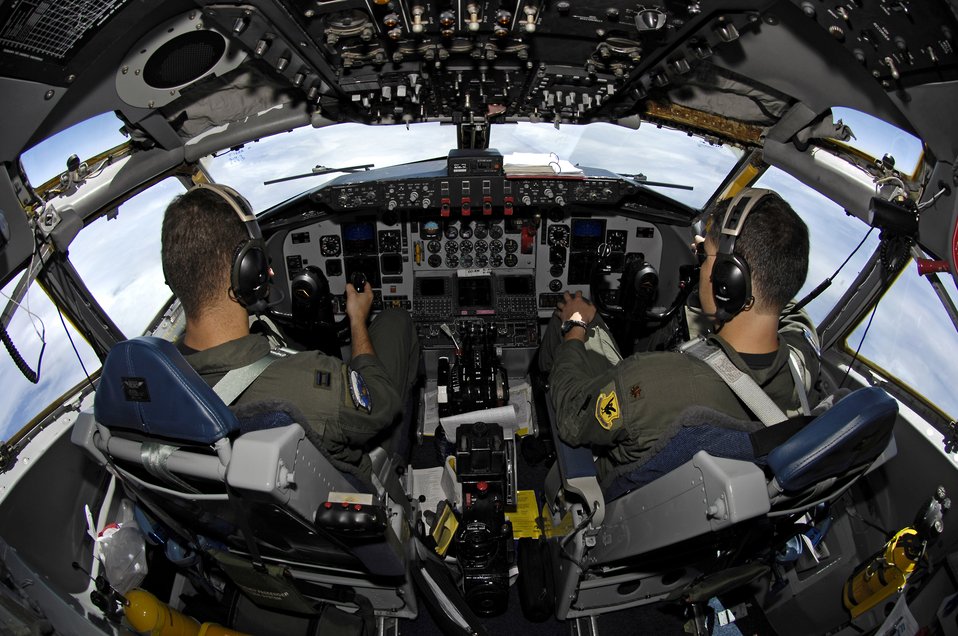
KC-135, C-17 crews rendezvous for refuel readiness

Capt. Jeff Quick and Maj. Brian Burr pilot their KC-135 Stratotanker June 18 during aerial refueling practice. The KC-135 crew from the 909th Air Refueling Squadron at Kadena Air Base, Japan is at Hickam Air Force Base, Hawaii, practicing with a C-17 Globemaster III from the 535th Airlift Squadron for the Air Mobility Command Rodeo.